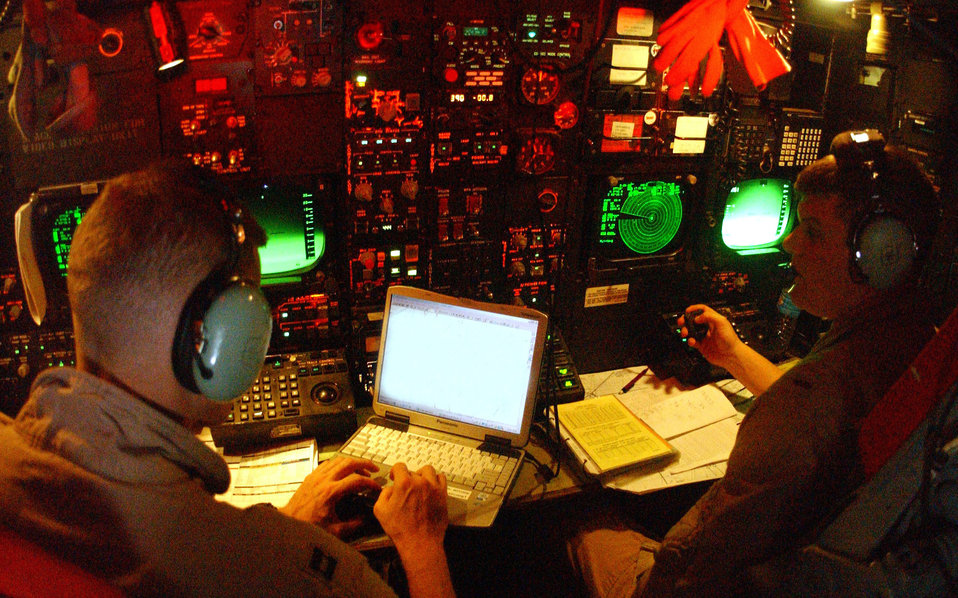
Buff mission

OPERATION IRAQI FREEDOM -- B-52 Stratofortress navigators track mission progress during an Operation Iraqi Freedom bombing mission. The venerable B-52 continues to prove its worth in the coalition air campaign for Operation Iraqi Freedom.